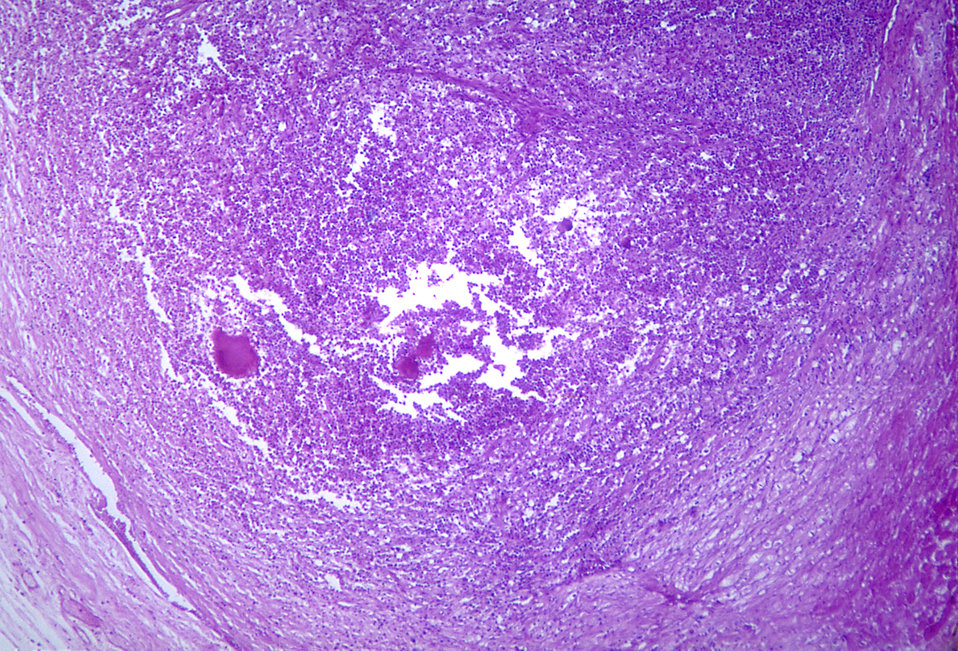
A photomicrograph of heart tissue revealing histopathologic changes due to Actinomyces sp. bacteria.